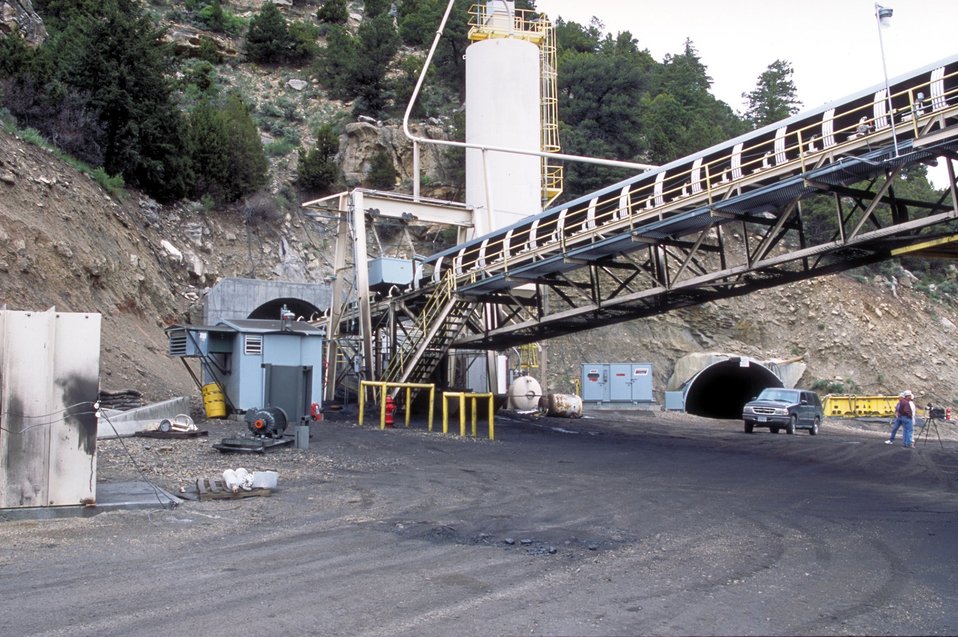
Coal production near Price, Utah.